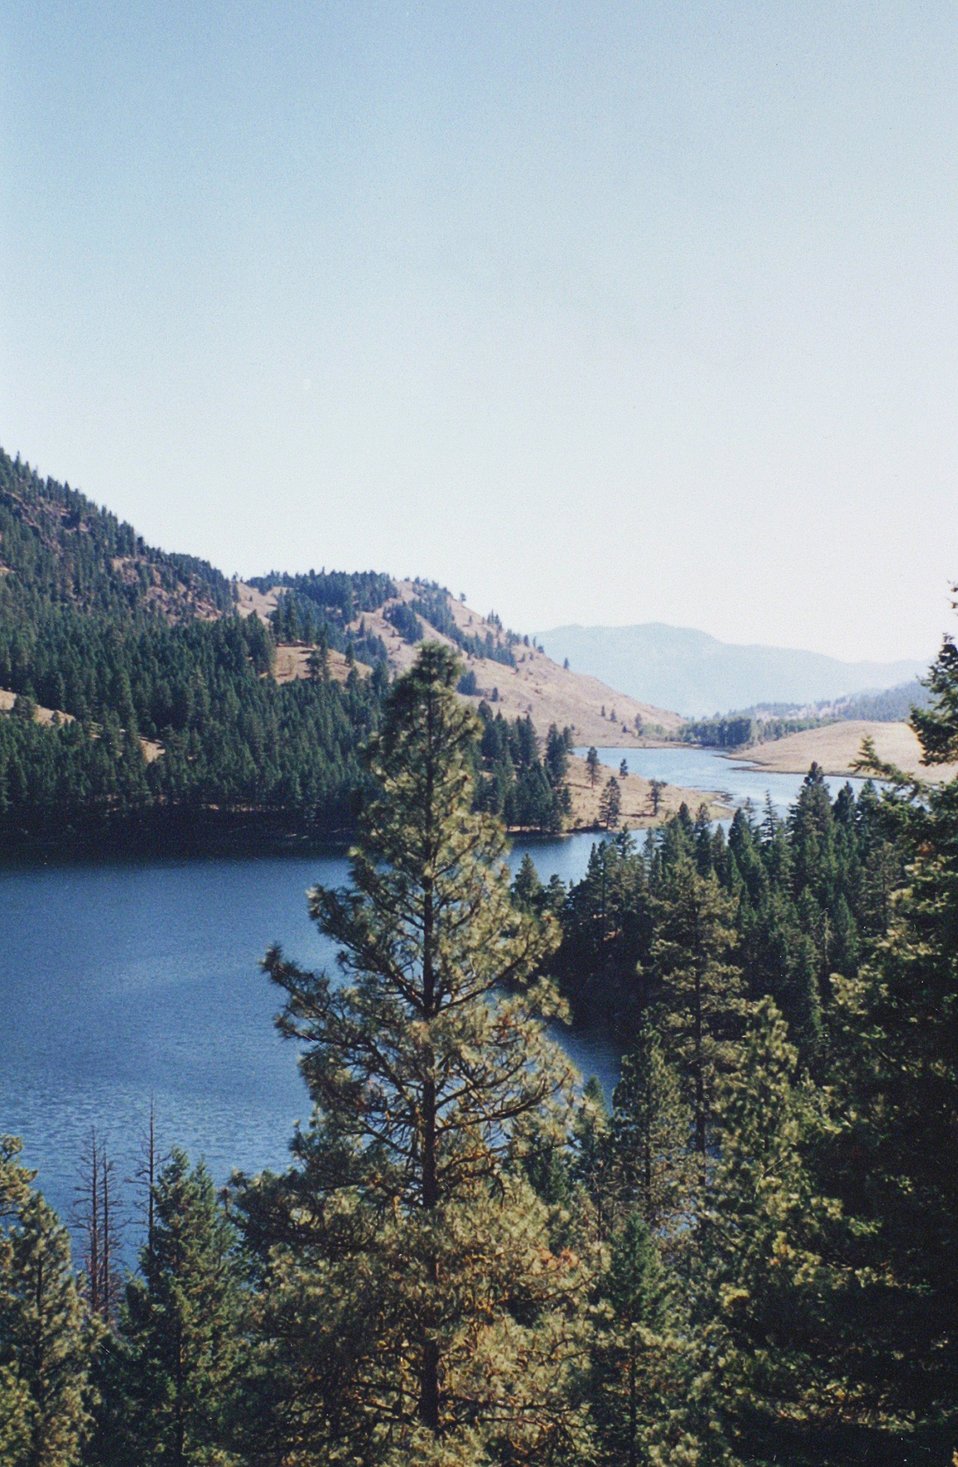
Chopaka, Wenatchee